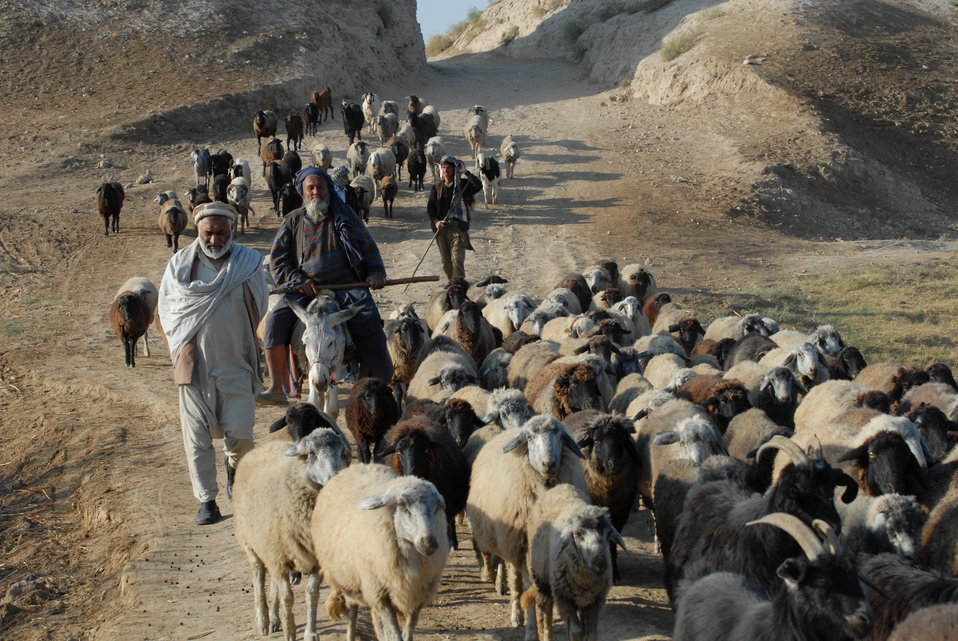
'On the Road' in Balkh Province